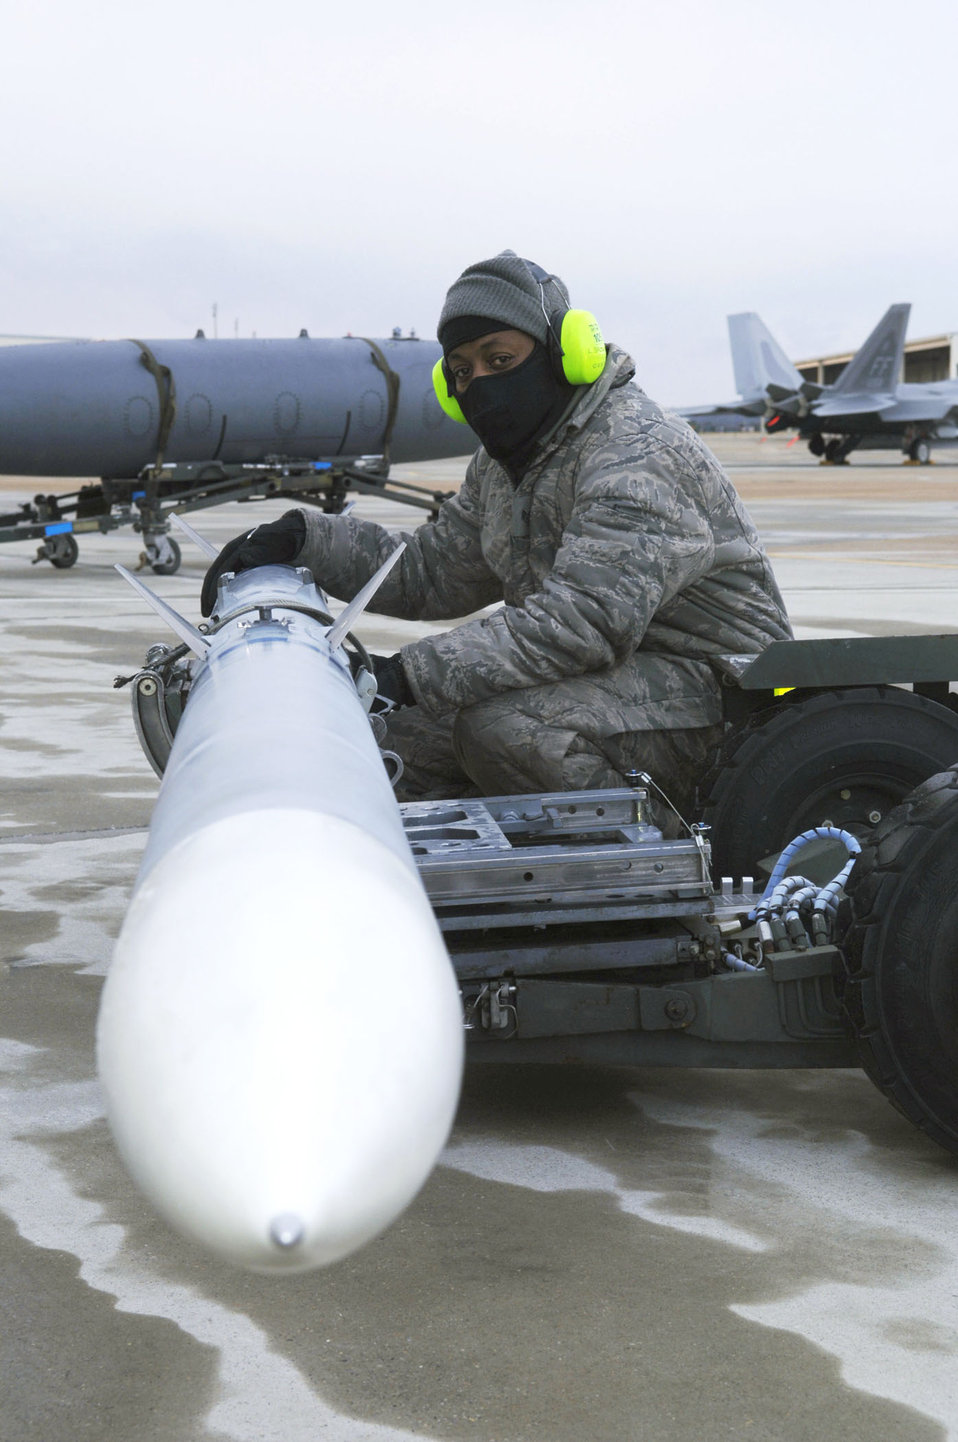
Langley Operational Readiness Exercise

Staff Sgt. Lamont Brown waits for the command to load munitions during an operational readiness exercise Jan. 8, 2011, at Joint Base Langley Eustis, Va. The Air Force units on base tested their readiness ability to deploy cargo, aircraft and people within a limited time frame. Sergeant Brown is a weapons load crew chief with the1st Maintenance Squadron.